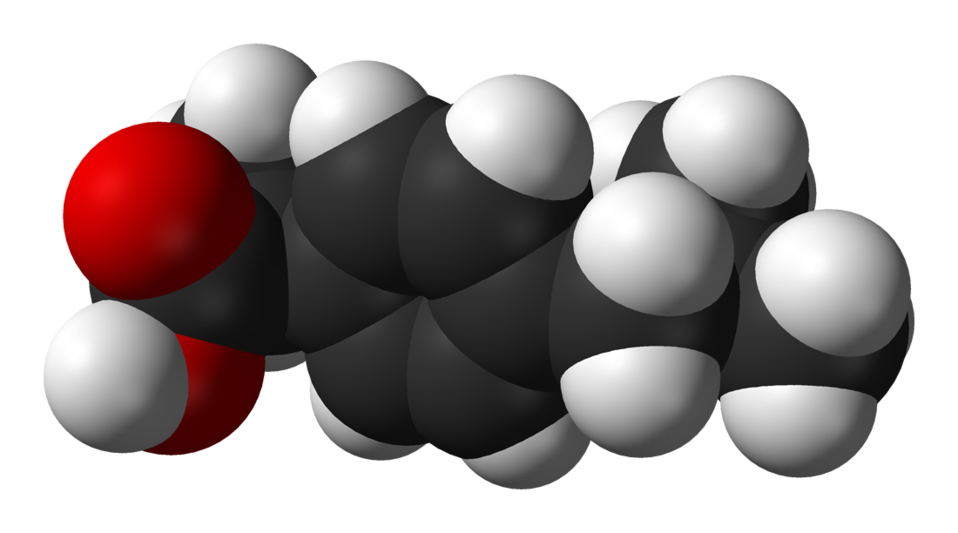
Space-filling model of the (S)-ibuprofen molecule, based on neutron diffraction data from N. Shankland, C. C. Wilson, A. J. Florence and P. J. Cox (1997). 'Refinement of Ibuprofen at 100K by Single-Crystal Pulsed Neutron Diffraction'. Acta Crystallographica Section C 53: 951-954. DOI:10.1107/S0108270197003193.